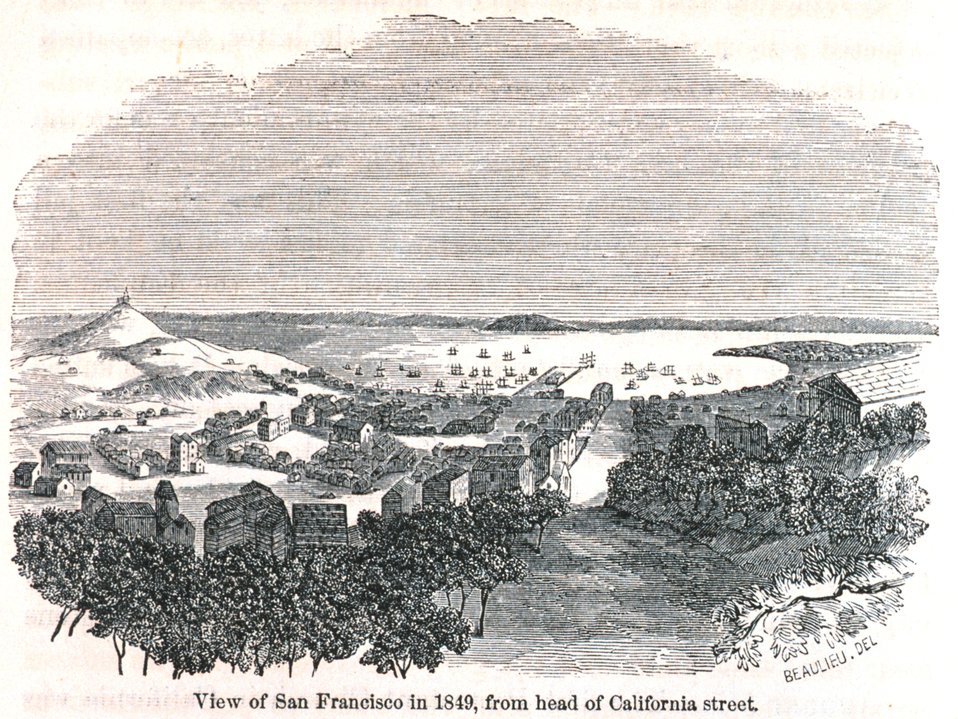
View of San Francisco in 1849 from the head of California Street. In: 'The Annals of San Francisco'. Frank Soule, John Gihon, and James Nesbit. 1855. Page 234. D. Appleton & Company, New York. F869.S3.S7 1855.